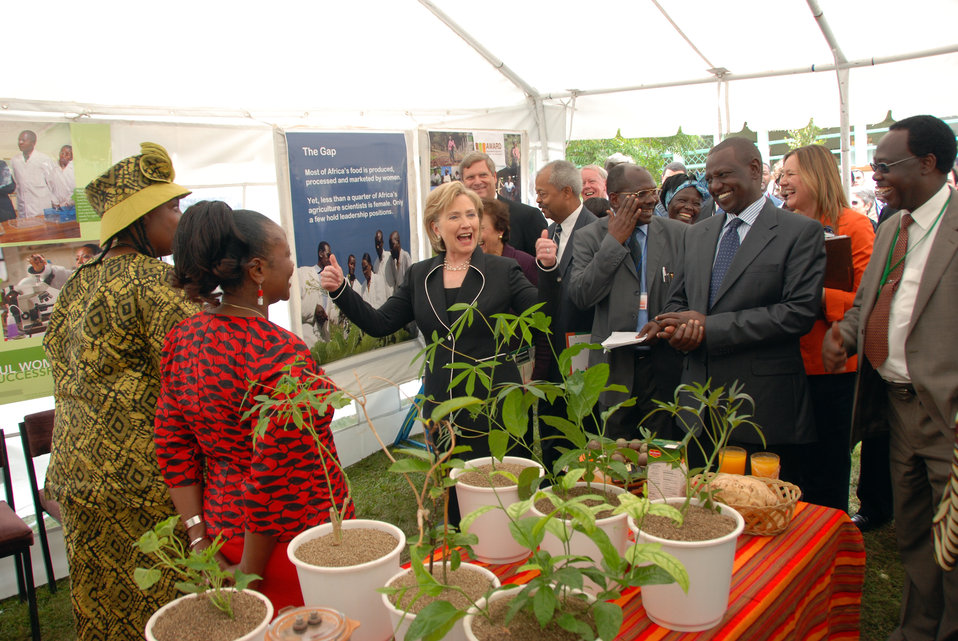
Secretary Clinton Visits Kenyan Agricultural Research Institute

U.S. Secretary of State Hillary Rodham Clinton with women from AWARD (African Women in Agricultural Research and Development) during a tour of the Kenyan Agricultural Research Institute (KARI) near Nairobi, Kenya August 5, 2009.